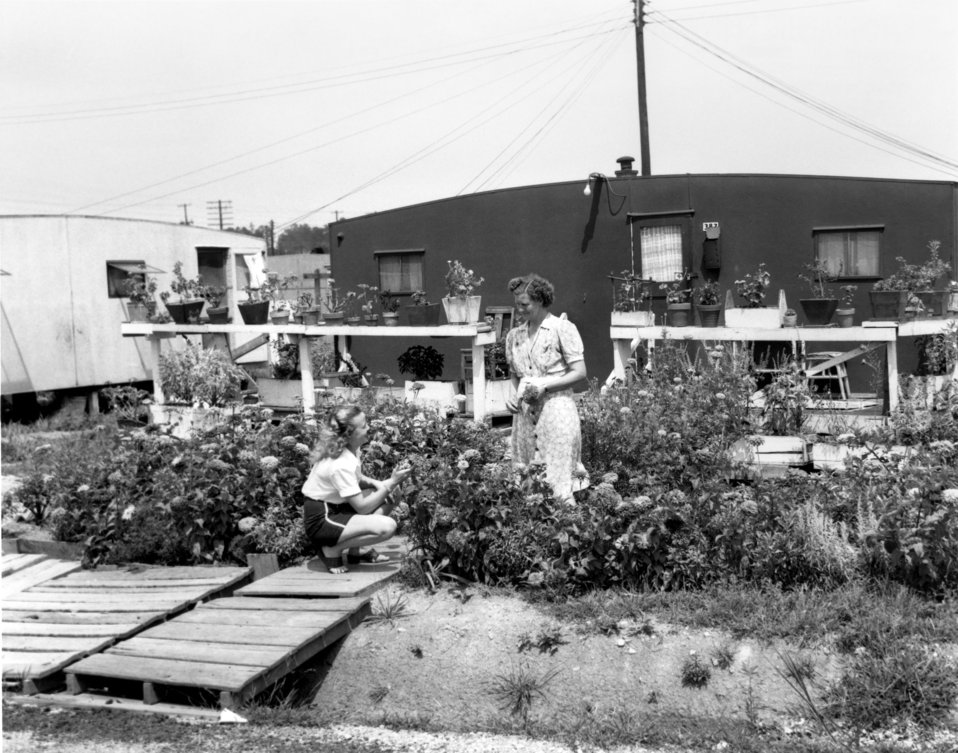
Trailer 1946 Oak Ridge Housing

1906-2 DOE photo Ed Westcott 8-8-1946 Oak Ridge Tennessee